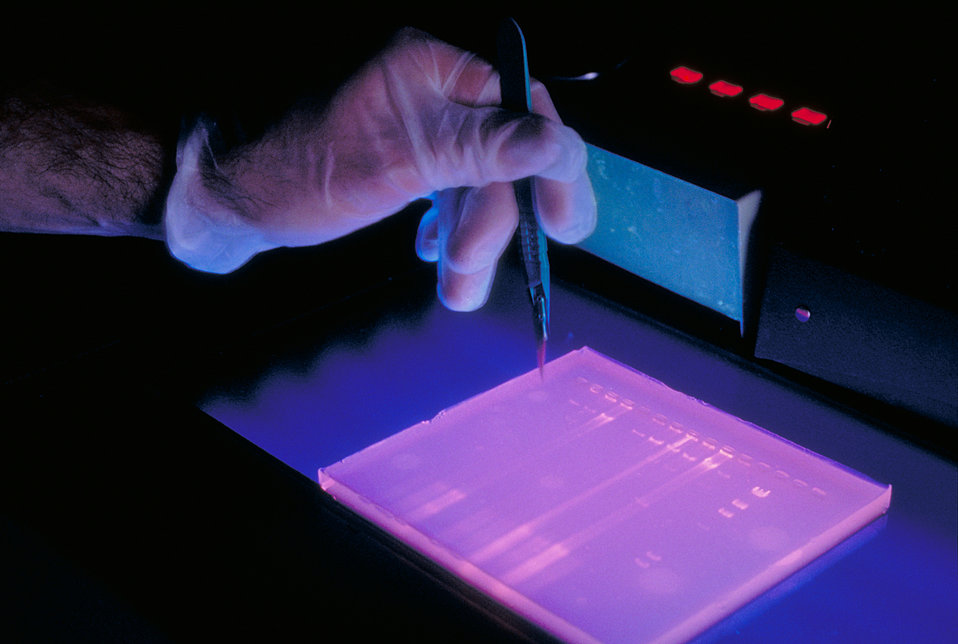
DNA study in CDC laboratory.